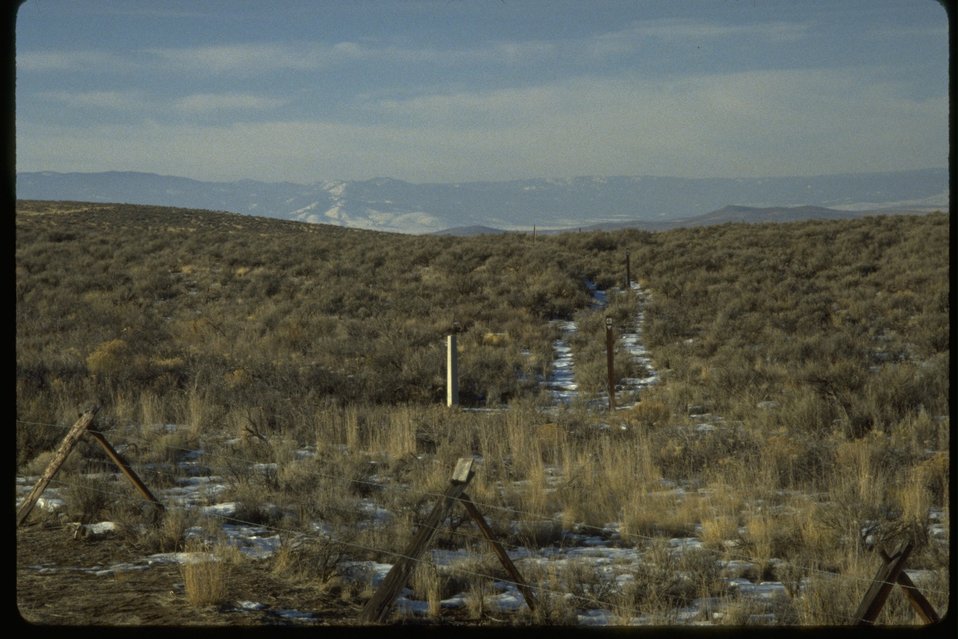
Flagstaff hill ruts near the NHOTIC.